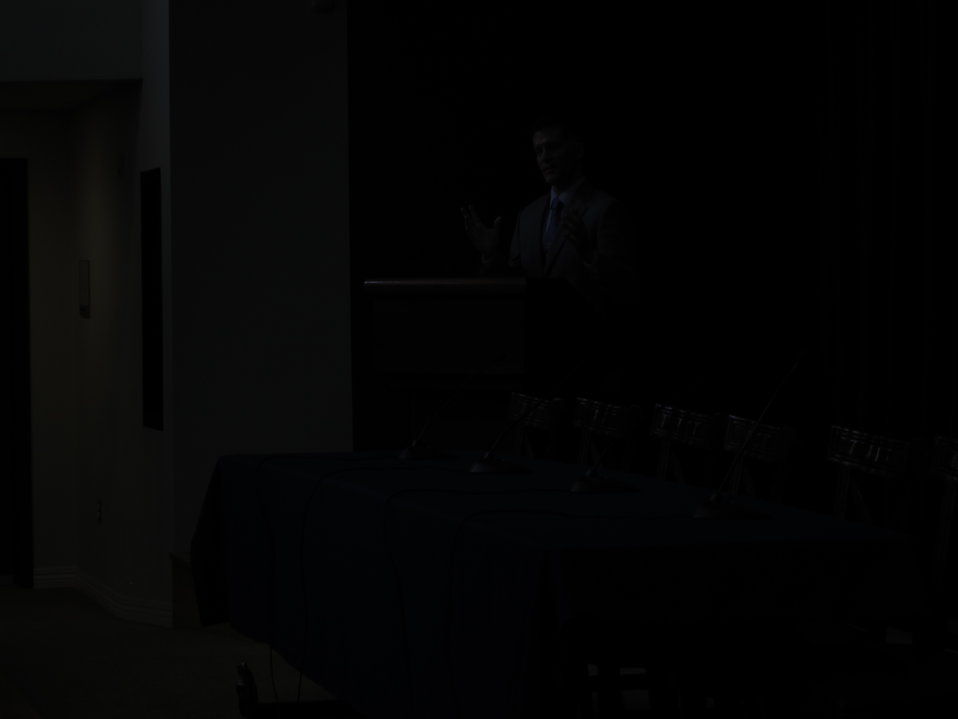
WH 2012 World Hepatitis Day Event